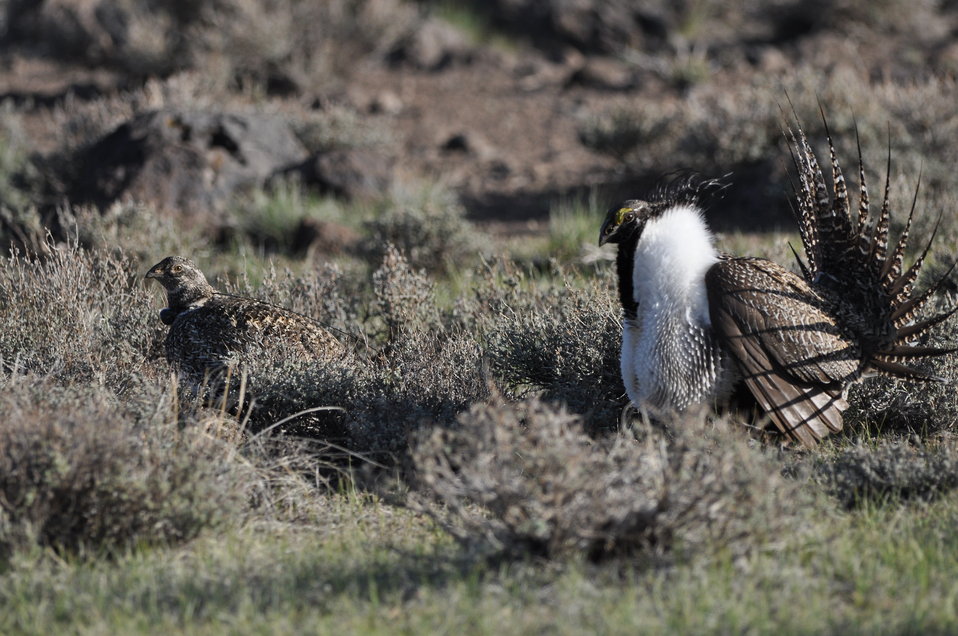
Greater Sage-Grouse

Photo Credit: Jeannie Stafford/USFWS
A greater sage-grouse male struts for a female at a lek (dancing or mating ground) near Bridgeport, CA.